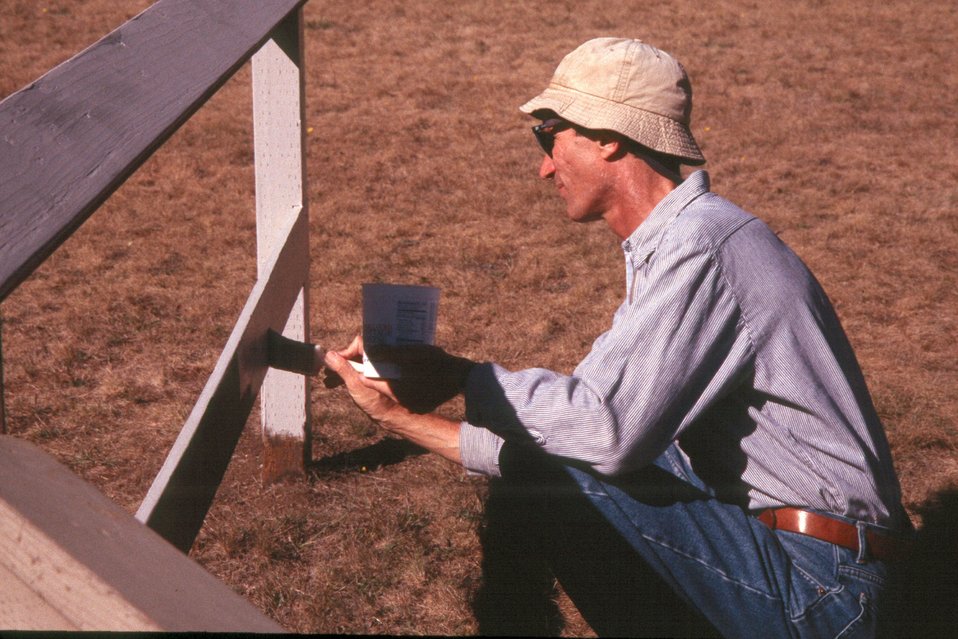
BLM field manager Steve Calish spruces up an interpretation site